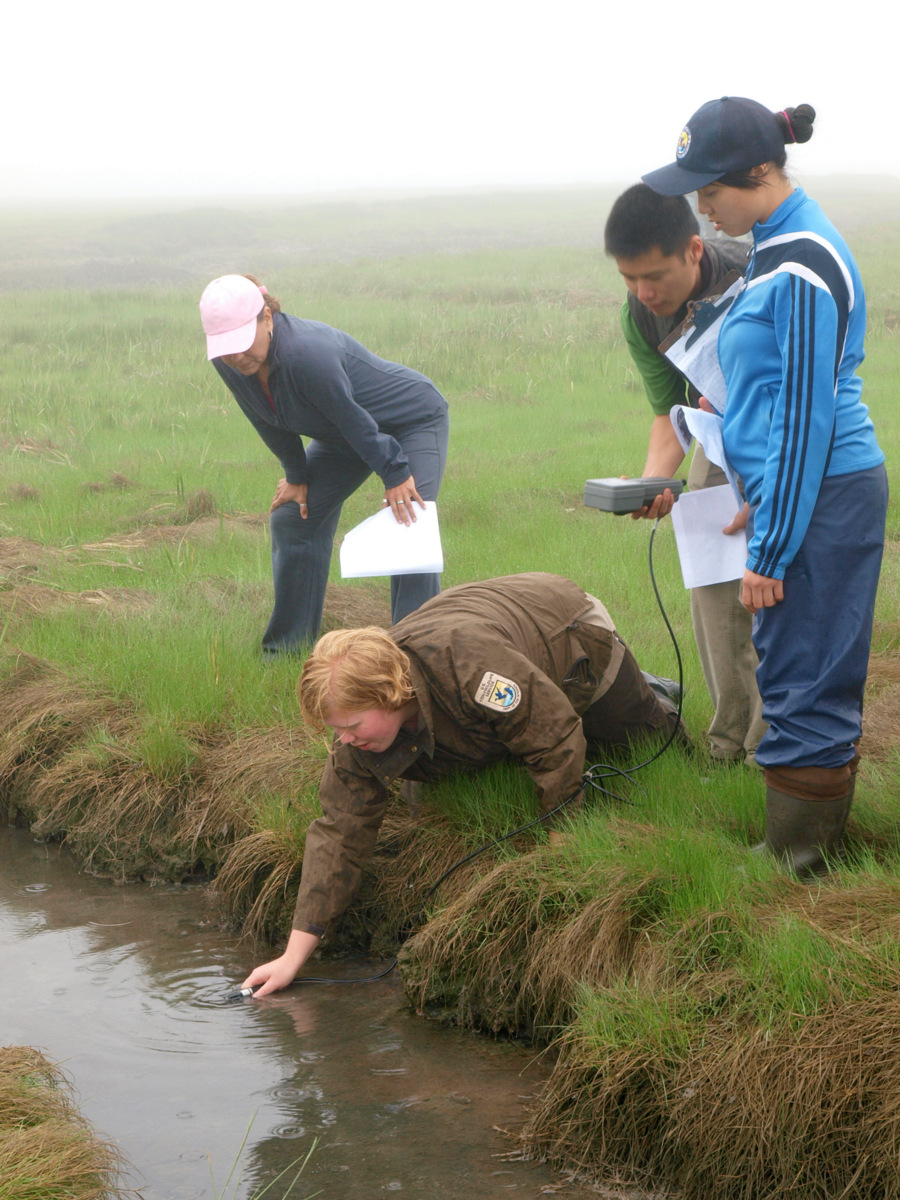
Testing salt marsh water quality with interns

Photographed at Rachel Carson National Wildlife Refuge.